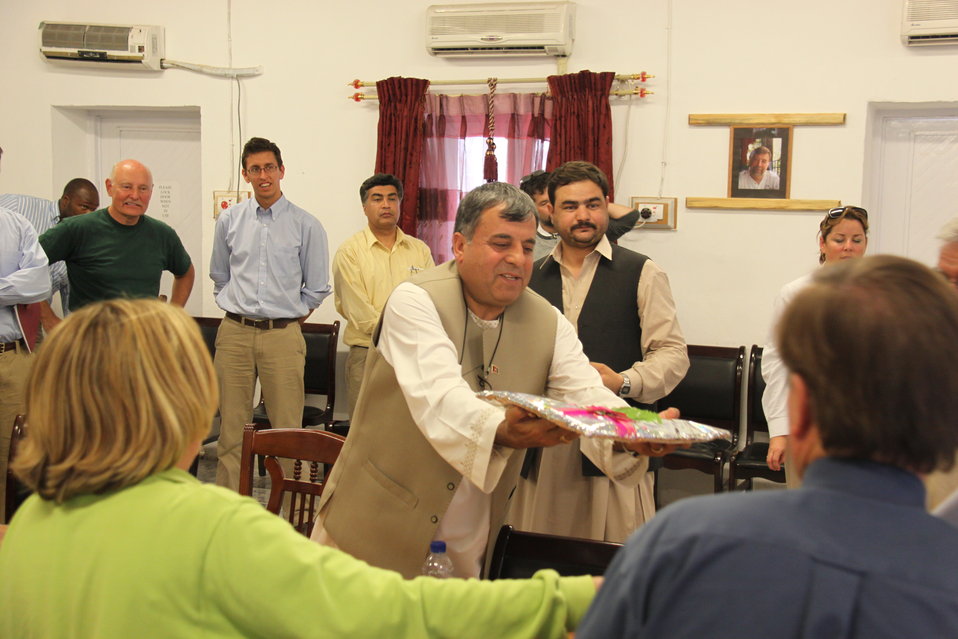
Meeting with Local Leaders in Kandahar